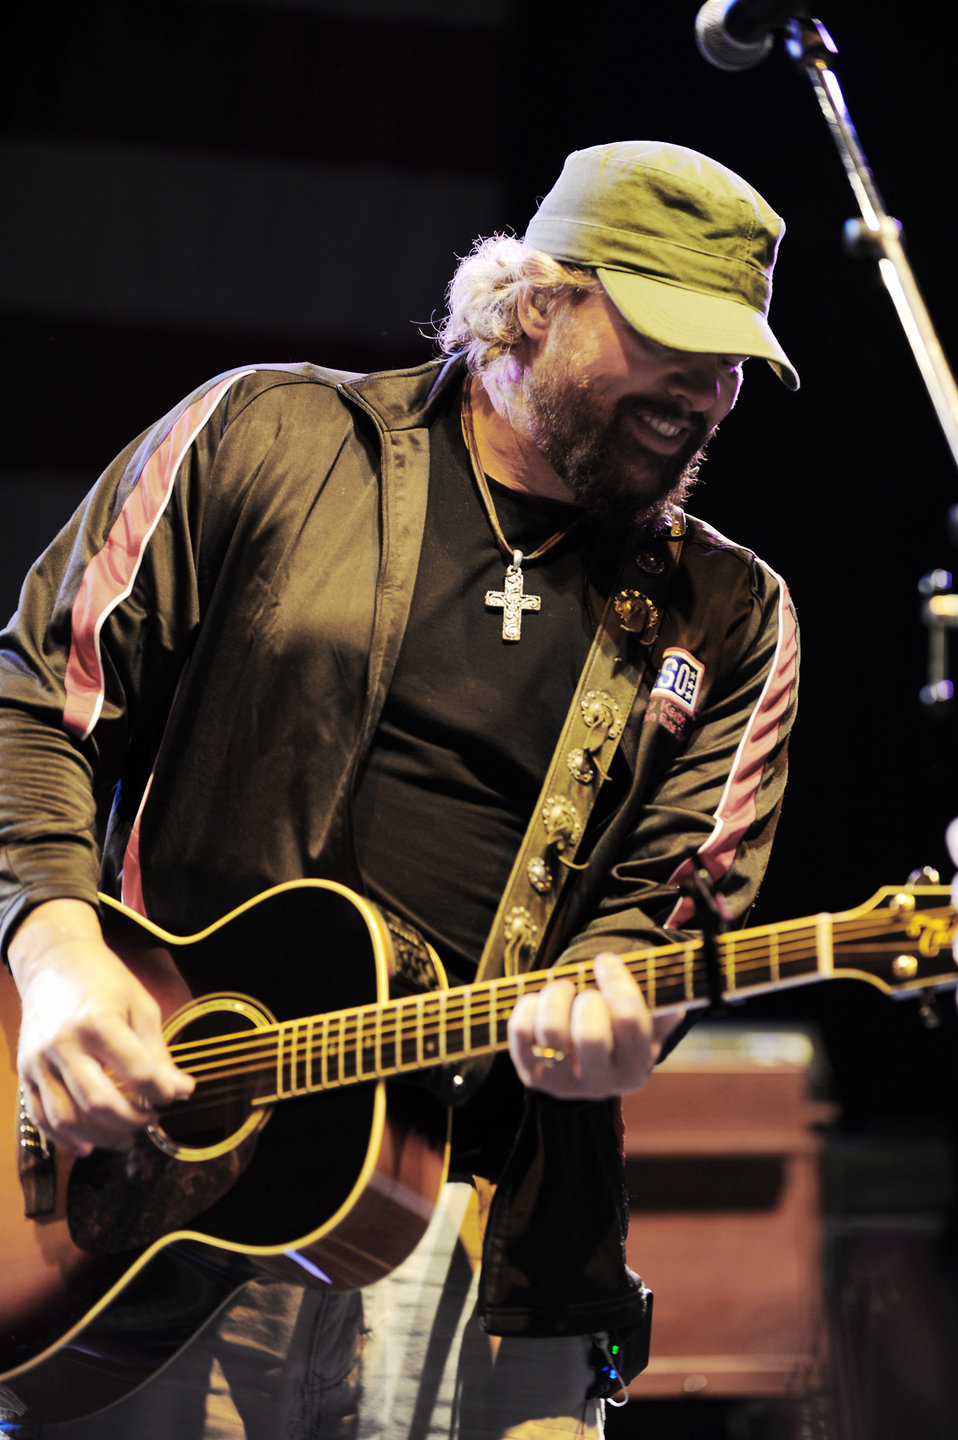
Country star entertains troops in Germany

Toby Keith performs during a concert May, 1, 2010, at Ramstein Air Base, Germany. The concert was sponsored by officials from the USO and Armed Forces Entertainment, and was designed to entertain and help boost the morale of troops and their families. Mr. Keith is a singer, songwriter and entertainer.